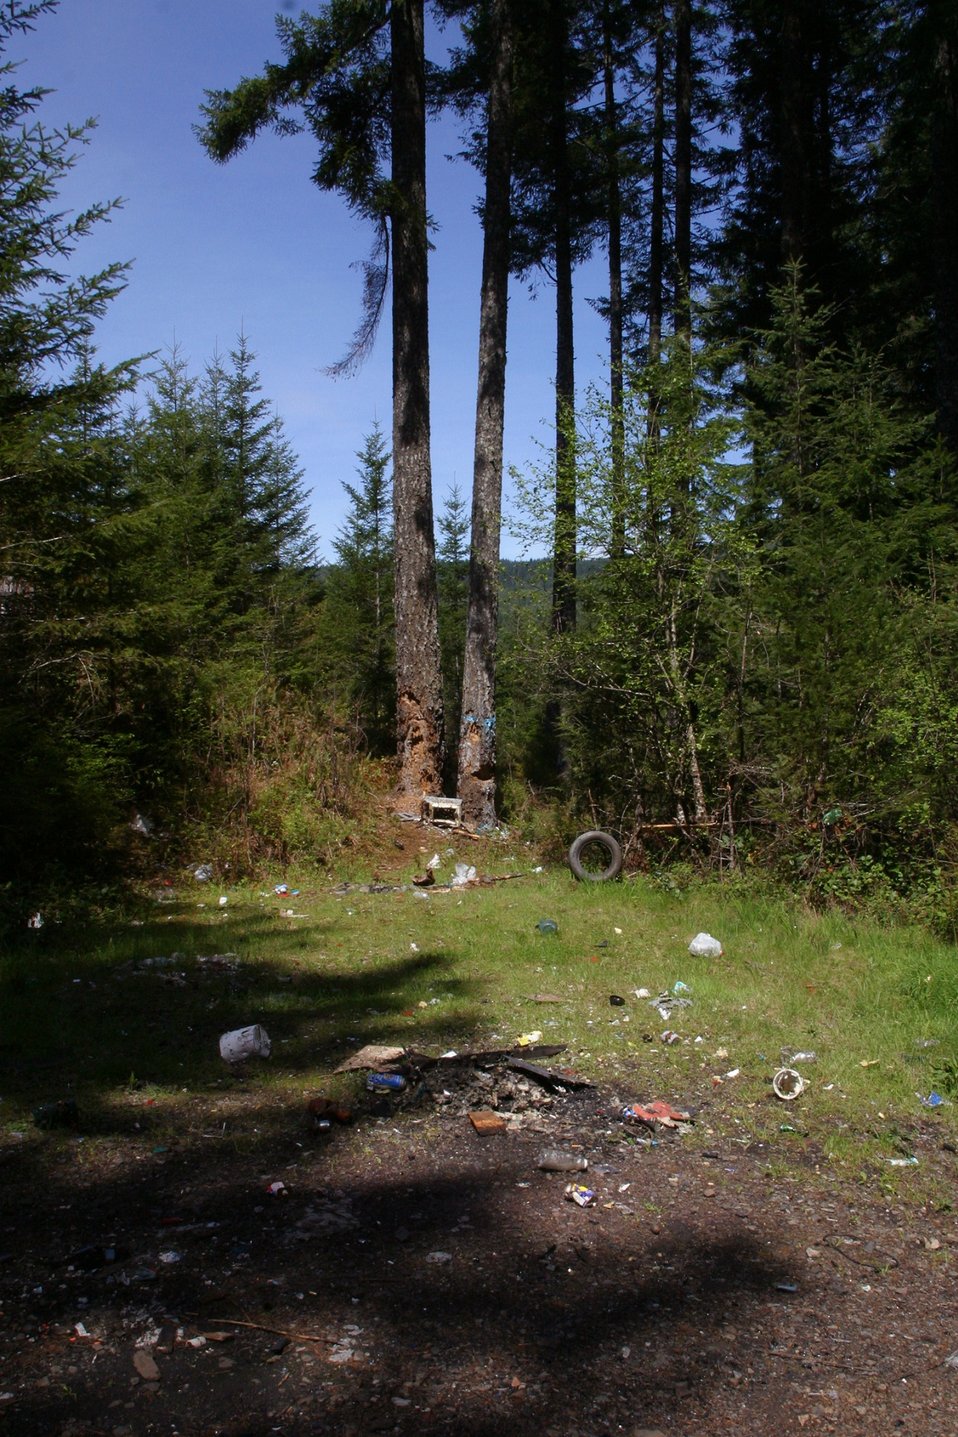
Illegal dumping ground in Santiam watershed used as a shooting range.